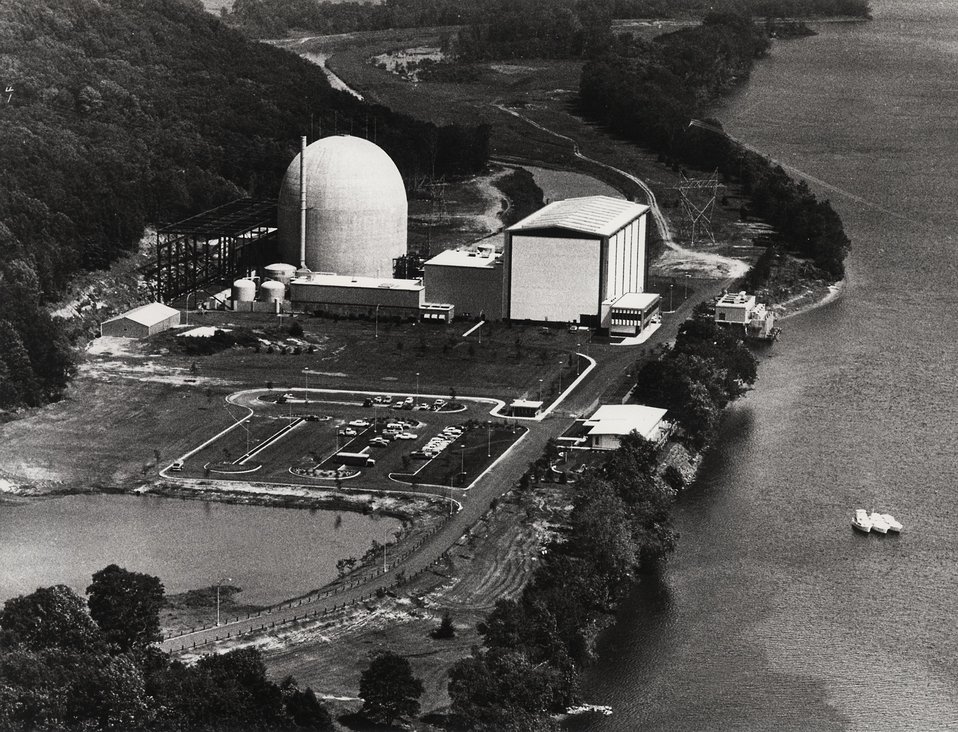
Haddam Neck.